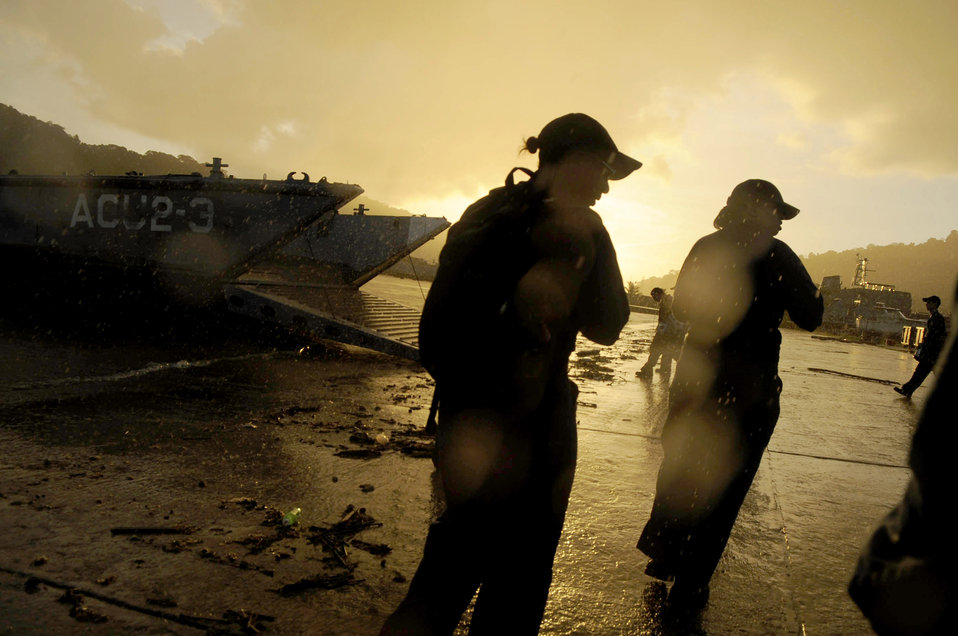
American servicemembers continue to provide promise

Sailors board a landing craft after completing a 14-hour day building fences and a playground at the All-in-One Development Center in support of Operation Continuing Promise 2008 Nov. 4 in Tunapuna, Trinidad and Tobago.